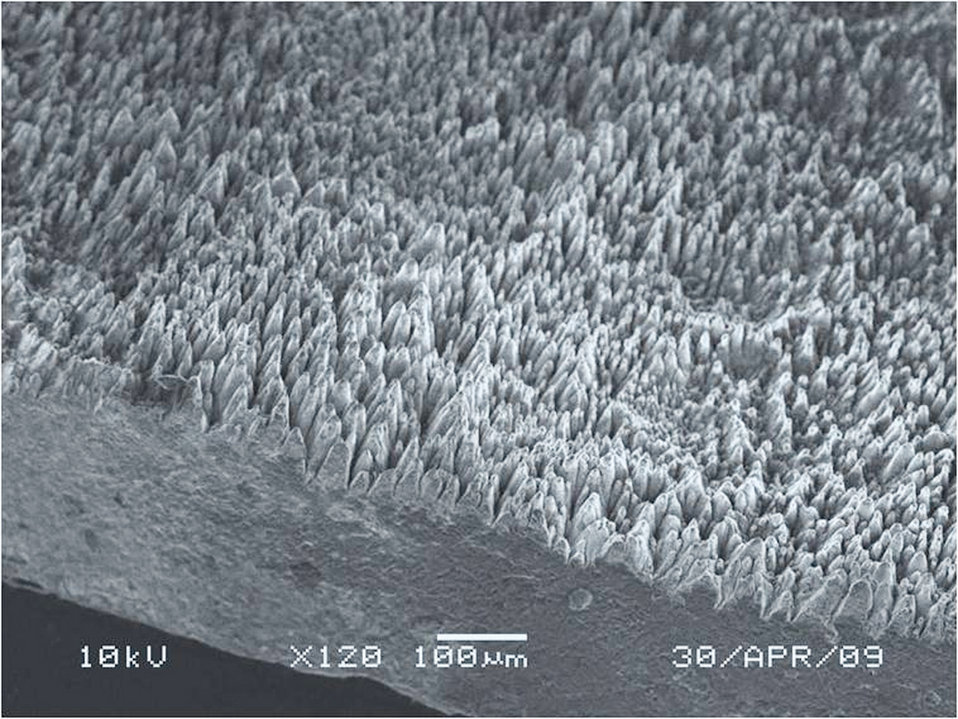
Physicists probe mystery of black silicon

The surface structure of black silicon, as imaged by an electron microscope, contains towers and valleys that dramatically increase the substance's surface area. Physicists theorize the structure contributes to black silicon's efficiency in absorbing light.